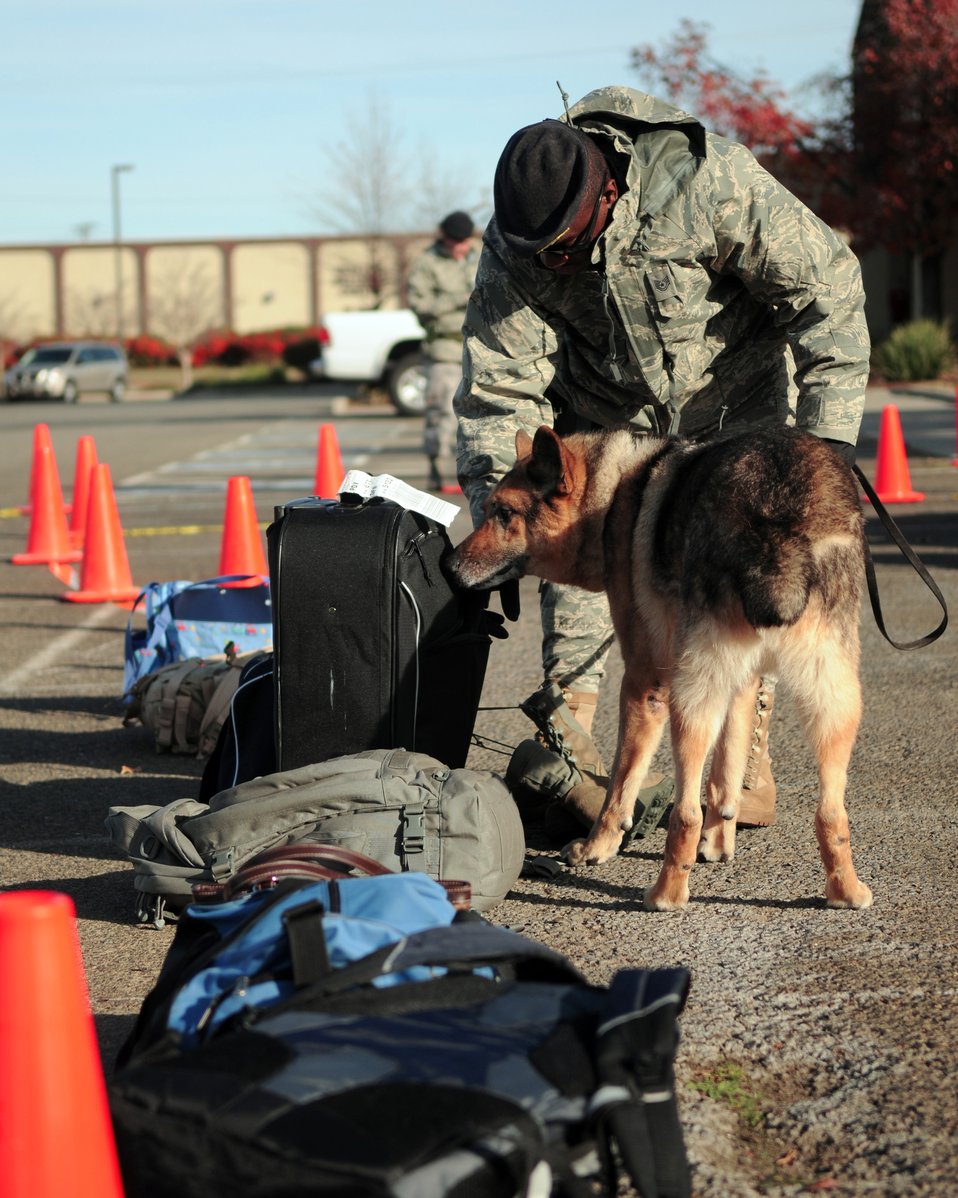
Smells OK to me

Tech. Sgt. Harry Harris with the 9th Security Forces Squadron and his narcotics detection dog Ben conduct a drug sweep of luggage at a security checkpoint during a major accident response exercise Dec.1, 2009, at Beale Air Force Base, Calif. The exercise tests the base's ability to take in evacuees from the local area safely.